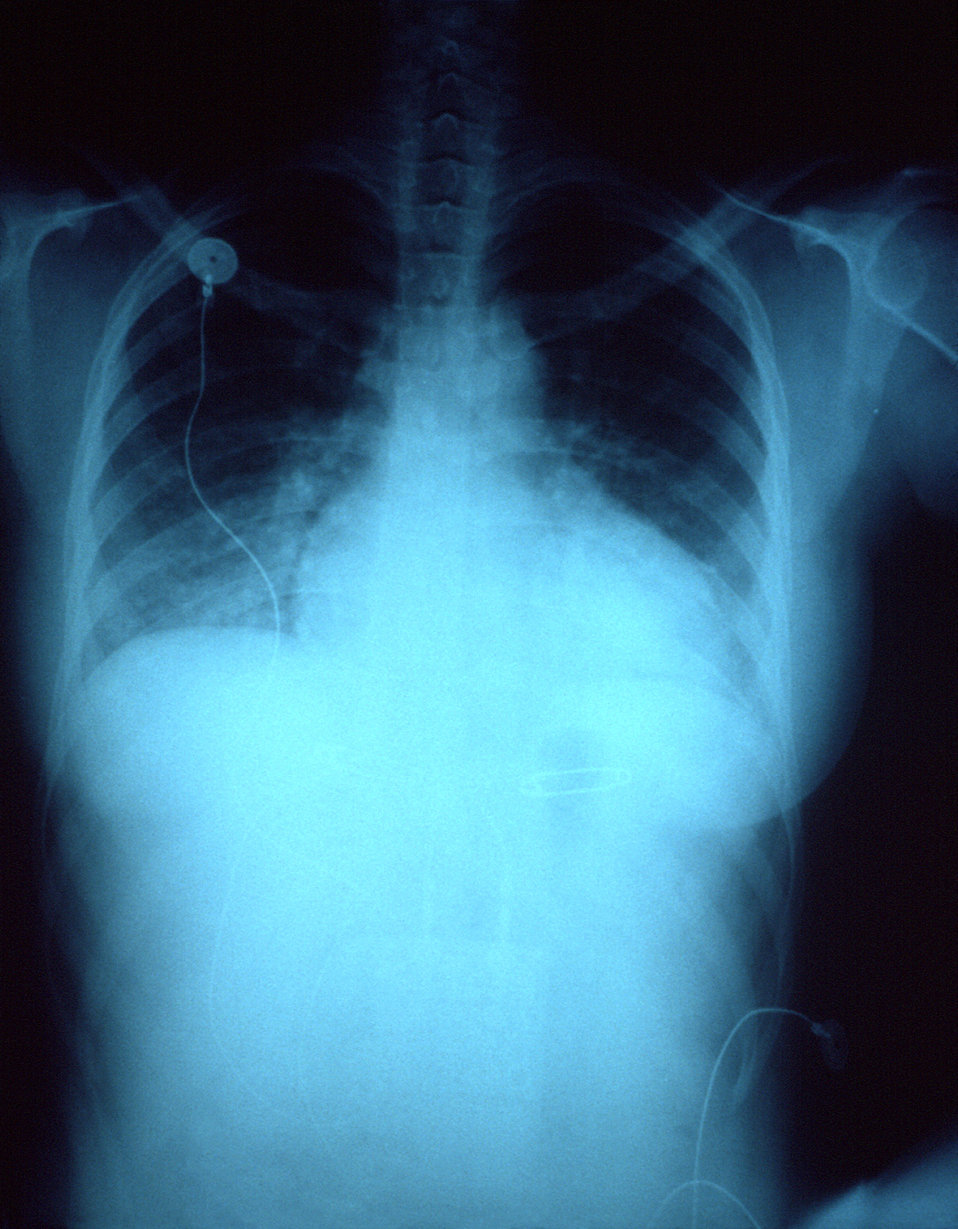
This 28 year old woman presented with congestive heart failure secondary to her chronic hypertension, or high blood pressure.